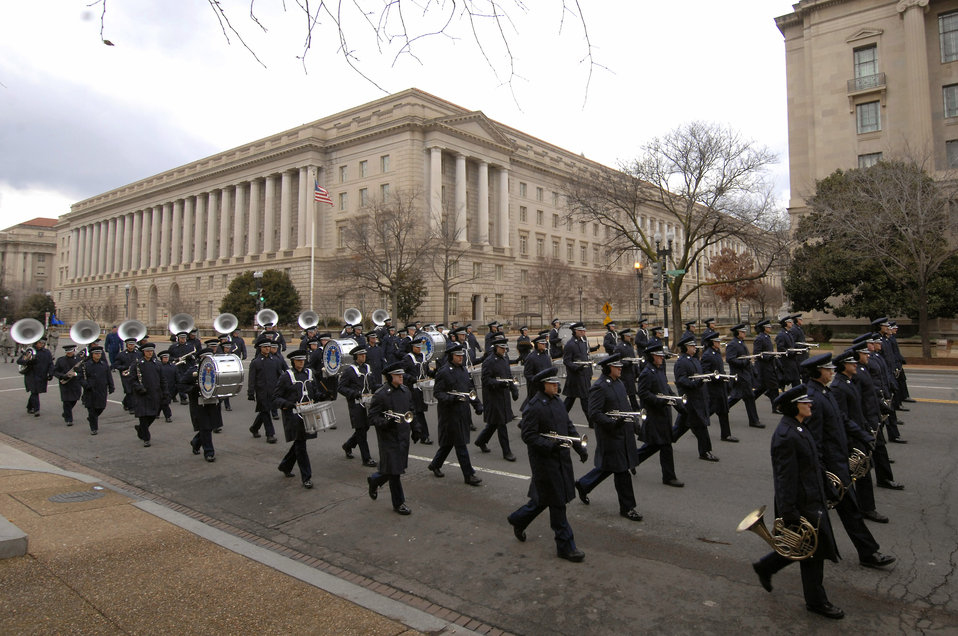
Practice makes perfect

Members of the Air Force Band march down Constitution Avenue during a practice run of the inauguration parade for President-elect Barack Obama Jan. 11 in Washington, D.C.